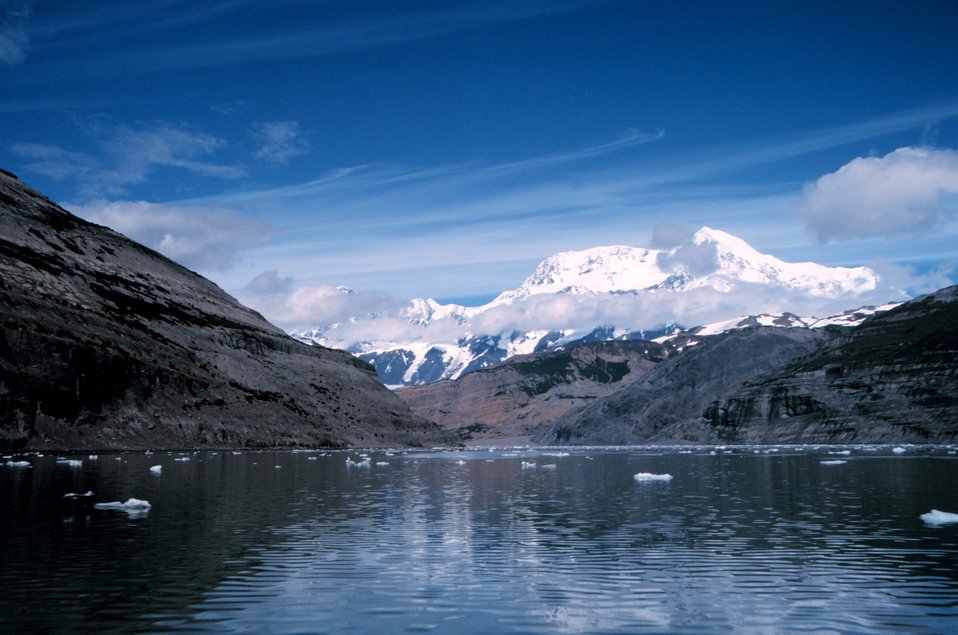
Photo #5 of Mount St. Elias sequence. Mount Saint Elias is one of the largest mountains visible from the sea on the North American continent. It rises to a height of 18,008 feet in a distance of less than 20 miles from sea level at Icy Bay.